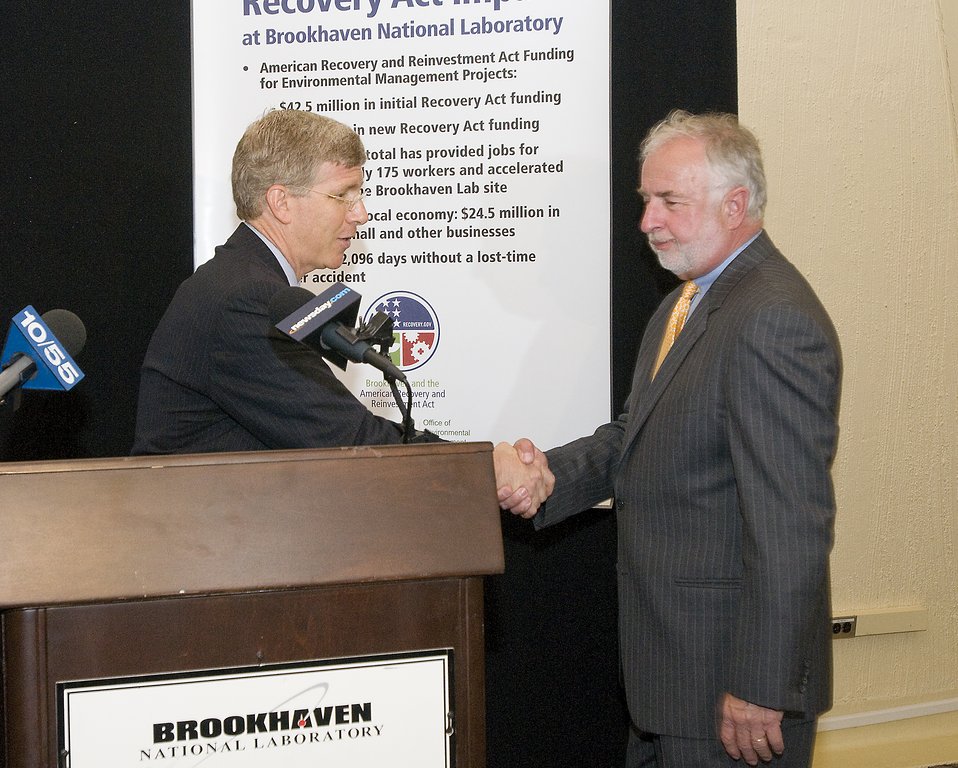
Brookhaven 5

Deputy secretary of doe.Daniel poneman